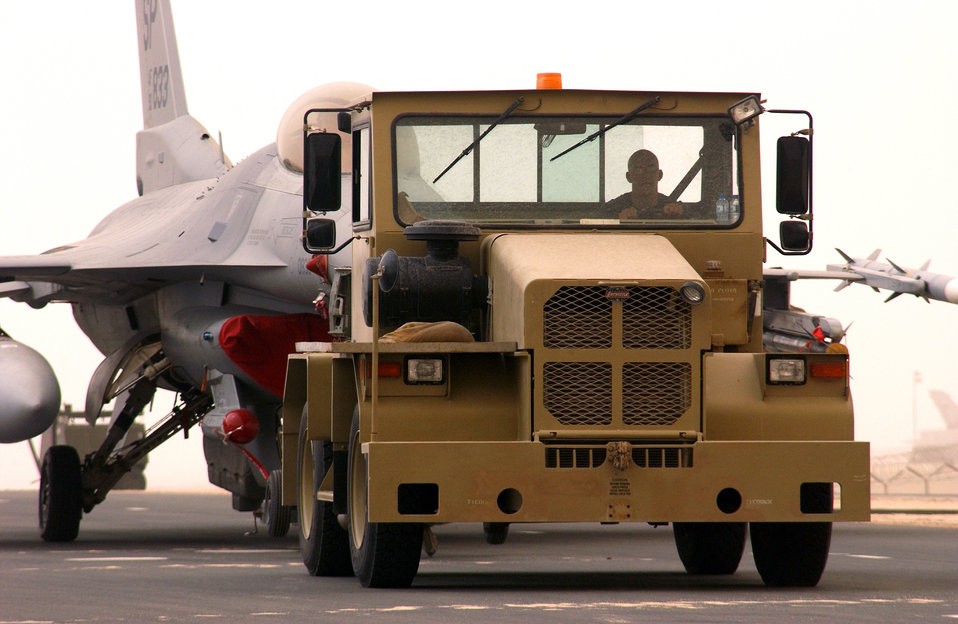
Towing a Falcon

OPERATION IRAQI FREEDOM - Senior Airman Danny Newland tows an F-16 Fighting Falcon at a forward-deployed location in Southwest Asia.